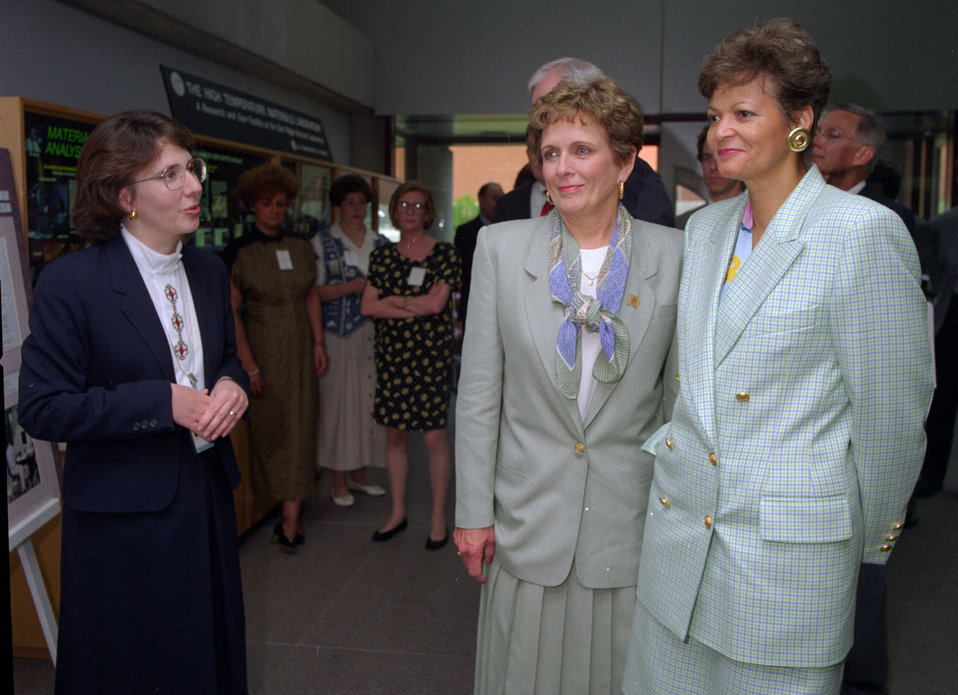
Energy Secretary Hazel O'Leary visit to the Oak Ridge Reservation with Congresswoman Marilyn Lloyd

94-303 DOE photo by Lynn Freeny

Energy Secretary Hazel O'Leary visit to the Oak Ridge Reservation with Congresswoman Marilyn Lloyd 4-29-1994